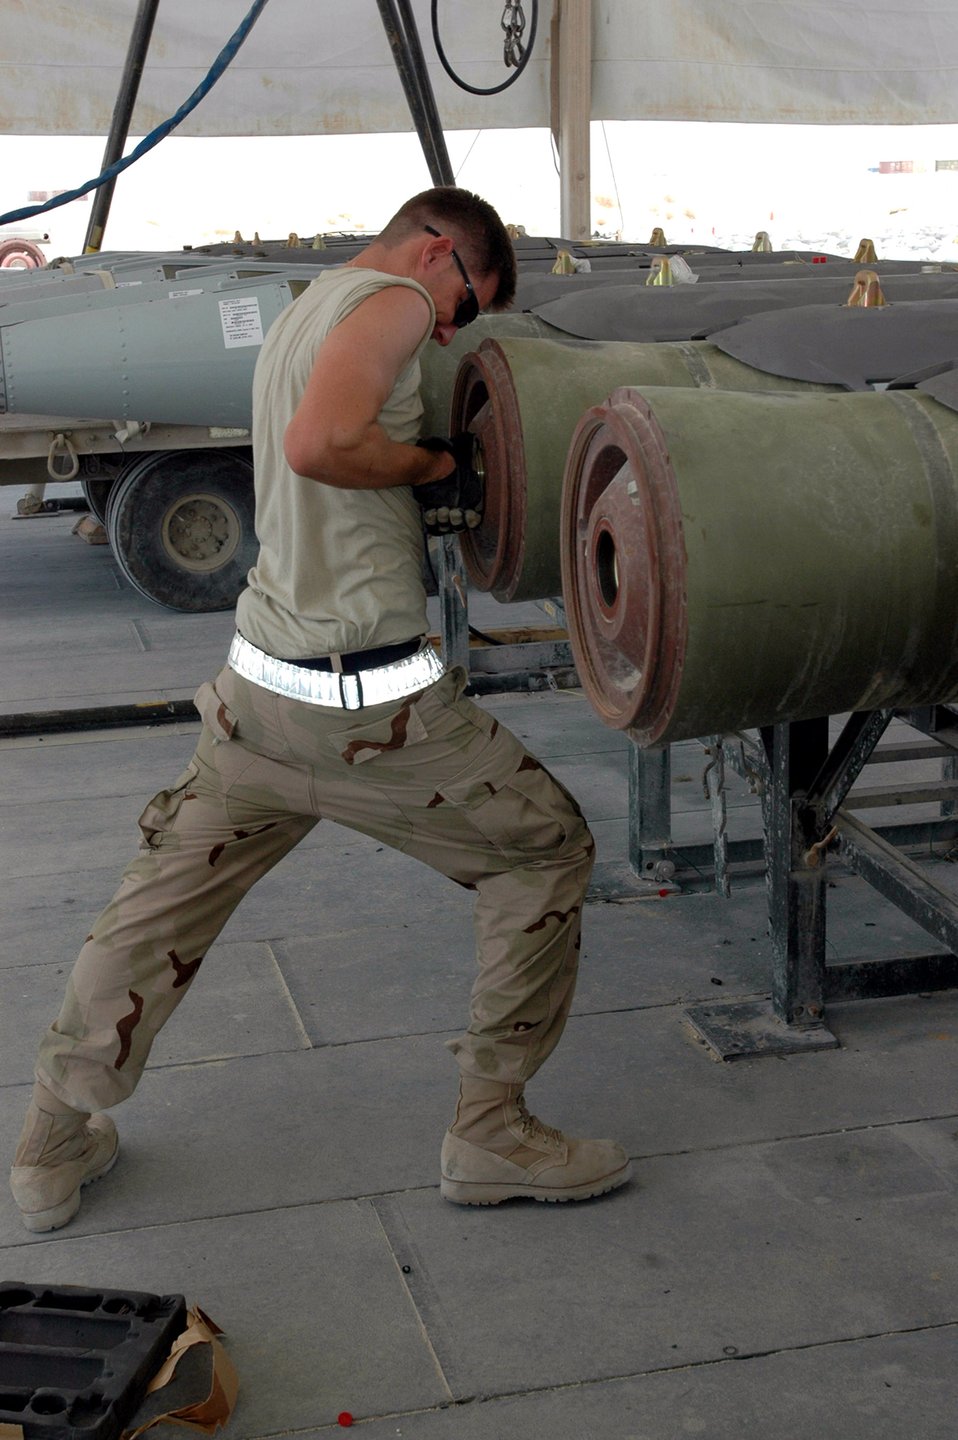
Expeditionary Airmen build bombs

Senior Airman John Neufield torques a fuze-retaining ring on a bomb. Airman Neufeld is with the 379th Expeditionary Maintenance Squadron's ammo flight at a deployed location in Southwest Asia.